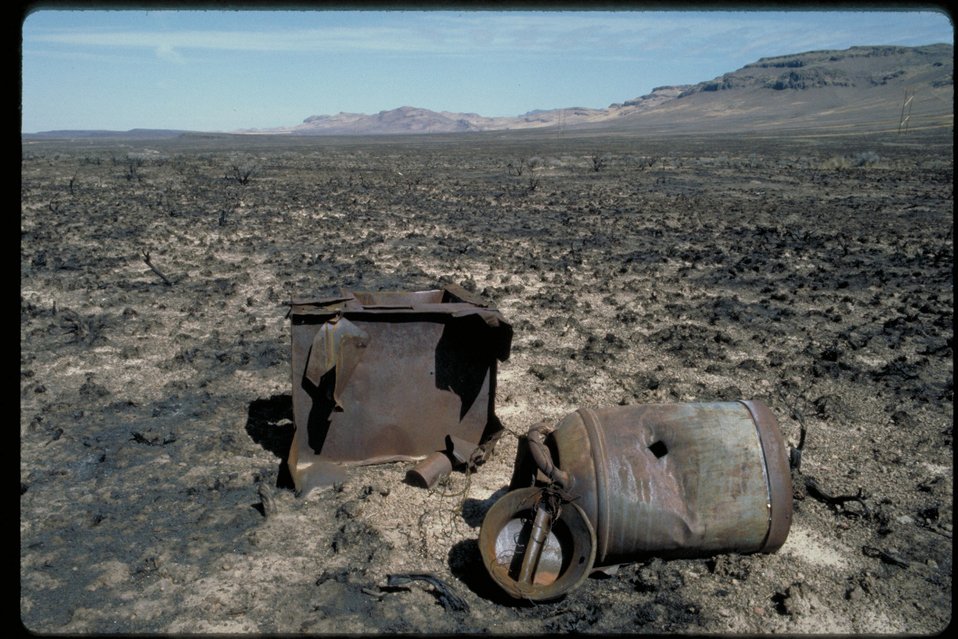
Oregon Trail West of Rattlesnake Lower Snake River District